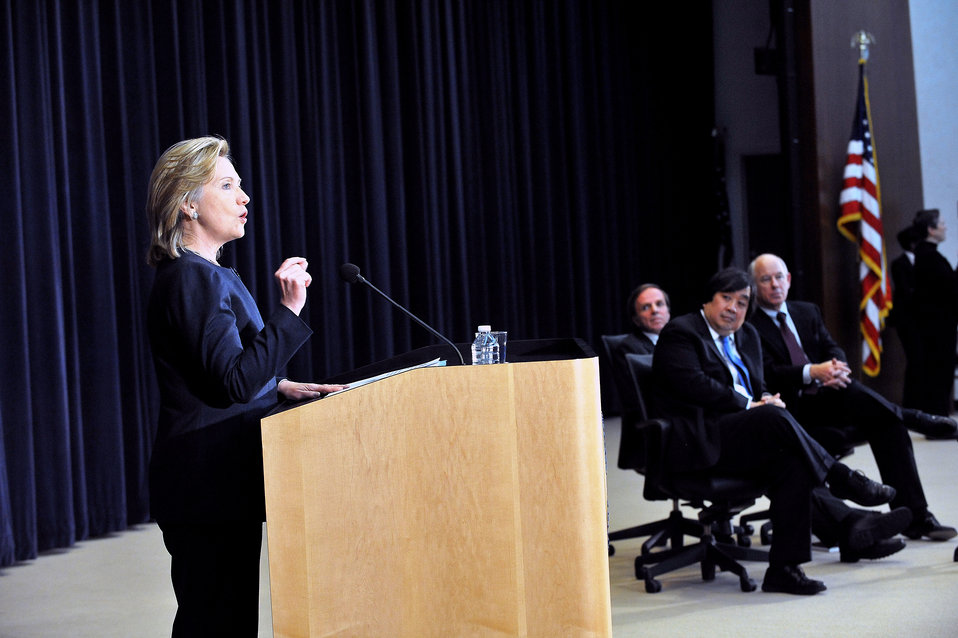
Secretary Clinton Delivers Remarks at the Human Rights Day Town Hall Meeting

U.S. Secretary of State Hillary Rodham Clinton delivers remarks at the Human Rights Day Town Hall Meeting with civil society organizations at the U.S. Department of State in Washington, D.C., on December 10, 2010.